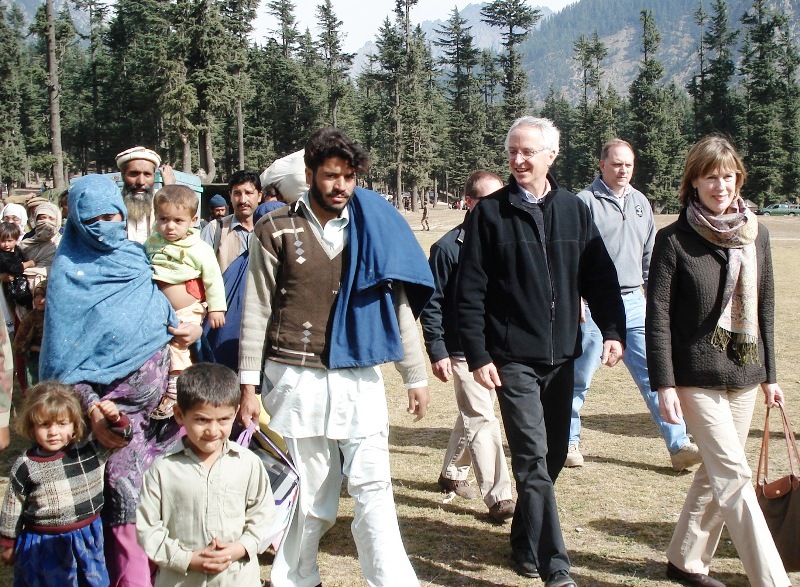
Ambassador Munter and His Wife Marilyn Wyatt Observe Pakistan's Flood-Affected Area

U.S. Ambassador to Pakistan Cameron Munter and his wife Marilyn Wyatt observe the flood-affected area of Kalam in Swat, Pakistan, November 4, 2010.